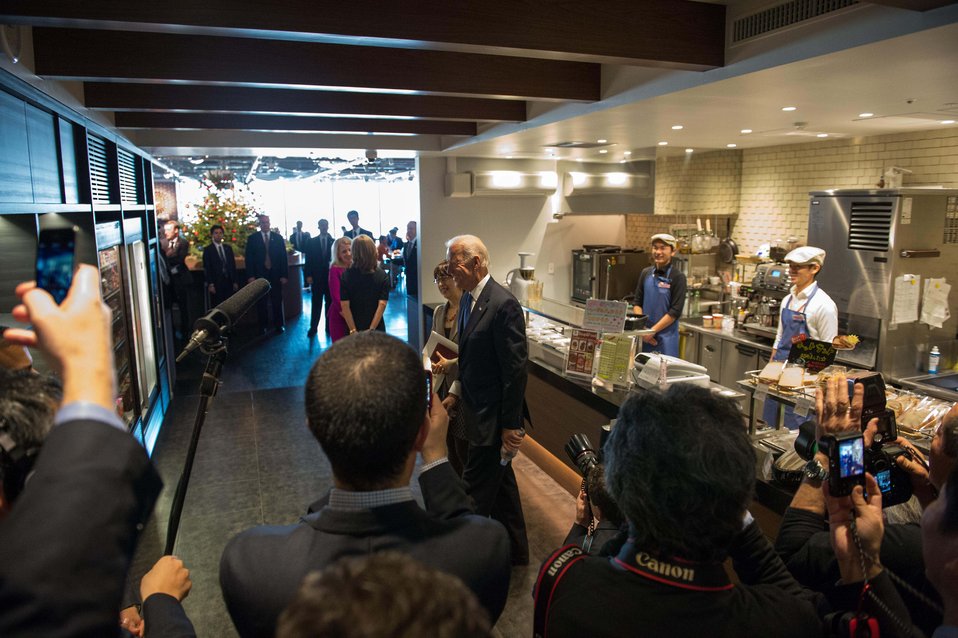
Vice President Biden Visits a Japanese Tech Company

Vice President Joseph Biden tours DeNA, a Tokyo-based tech company, with the company’s founder Tomoko Namba in Tokyo, Japan, on December 3, 2013.